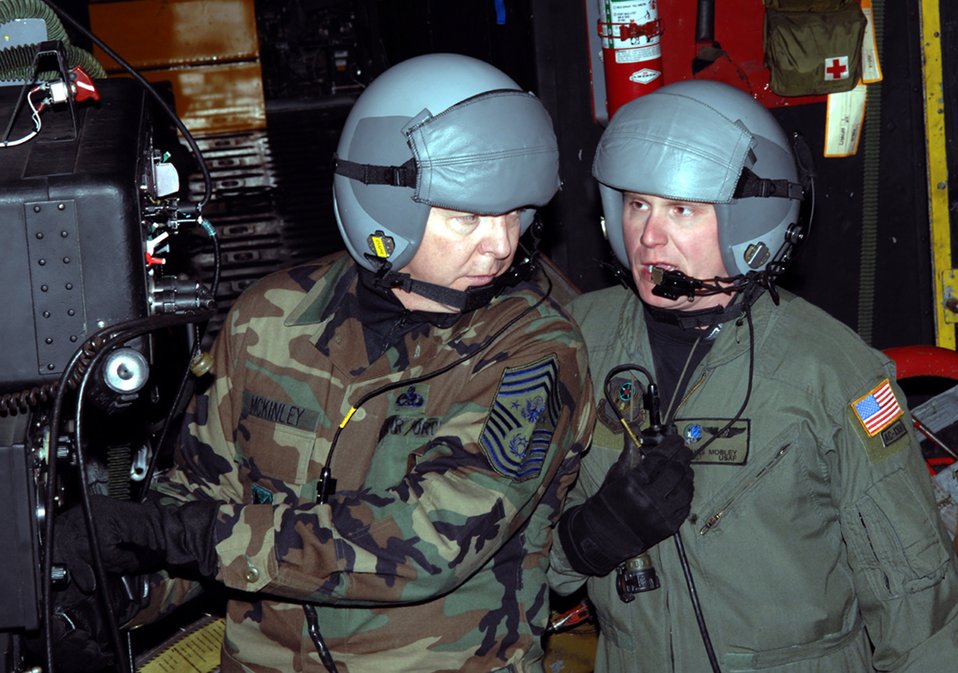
chief visits hulbert field

Chief Master Sgt. of the Air Force Rodney J. McKinley chats with Staff Sgt. James Mobley, 16th Special Operations Squadron, during his orientation flight aboard an AC-130H March 5 at Hurlburt Field.